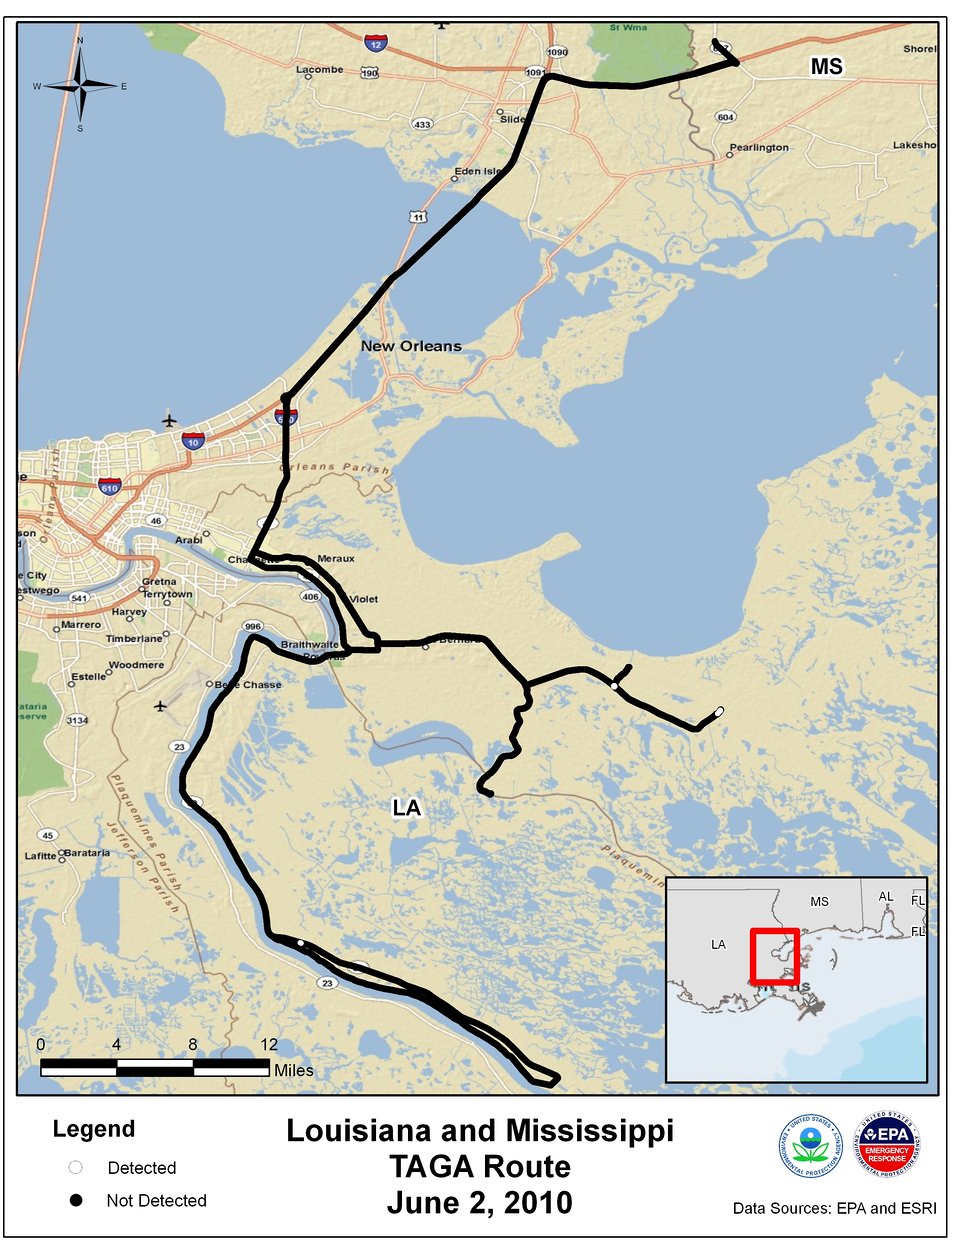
EPA TAGA Air Monitoring Locations June 2, 2010